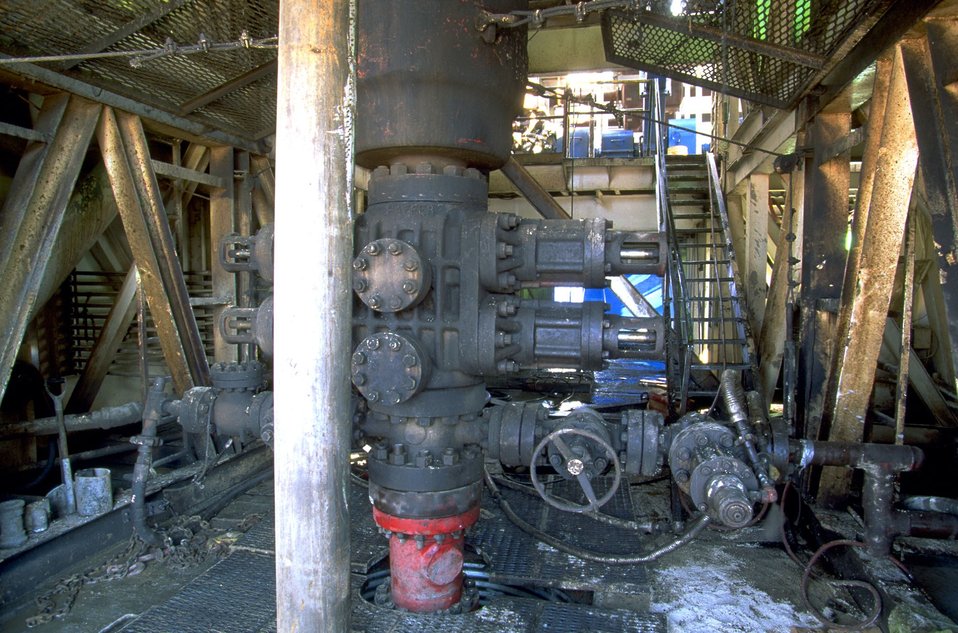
Blowout prevention equipment below drilling platform--blind ram, pipe ram and anular preventer